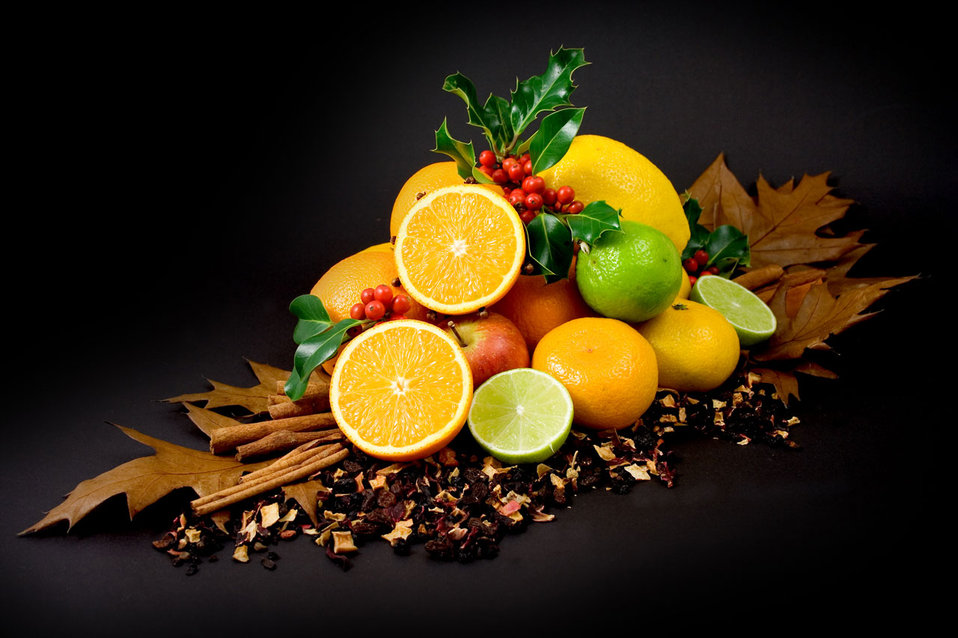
Autumn still life

A selection of autumn products on black background.